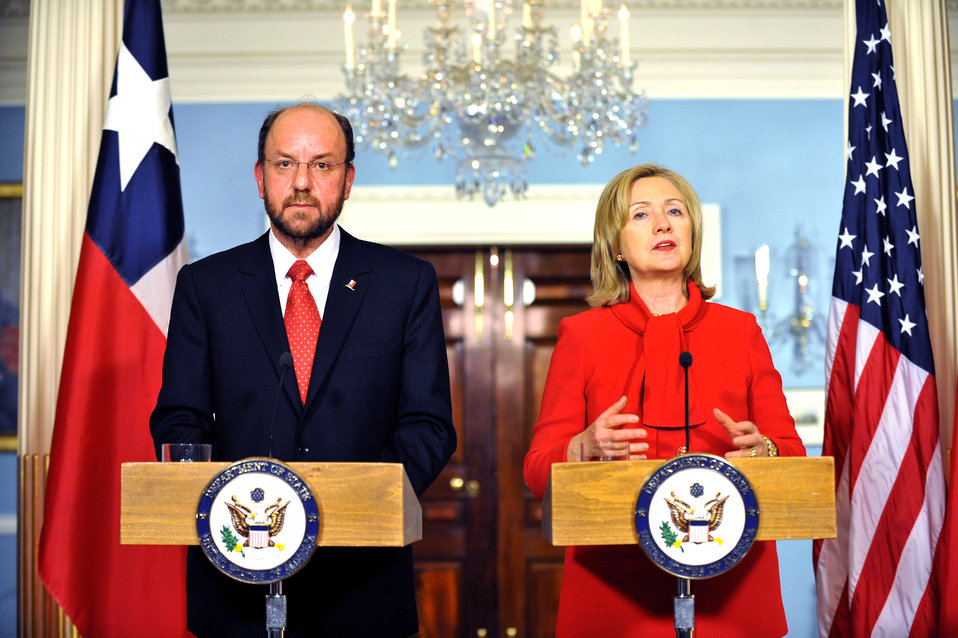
Secretary Clinton Holds a Press Conference With Chilean Foreign Minister Moreno

U.S. Secretary of State Hillary Rodham Clinton holds a joint press conference with Chilean Foreign Minister Alfredo Moreno after their bilateral meeting at the U.S. Department of State in Washington, D.C., on March 10, 2011.